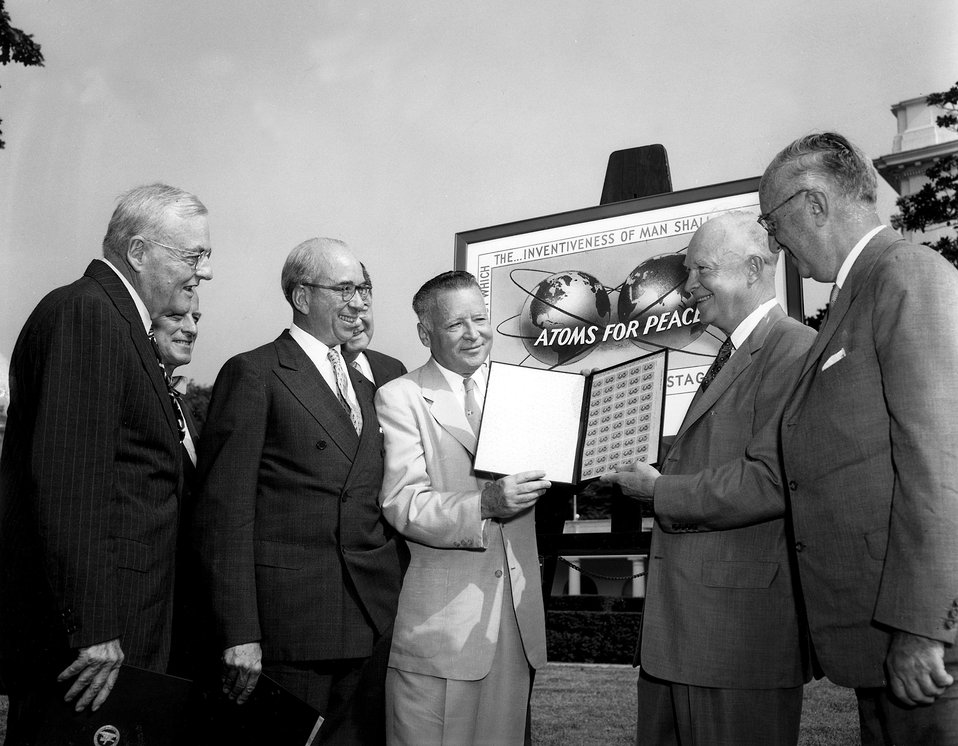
President Eisenhower receives an album of Atoms-for-Peace stamps.